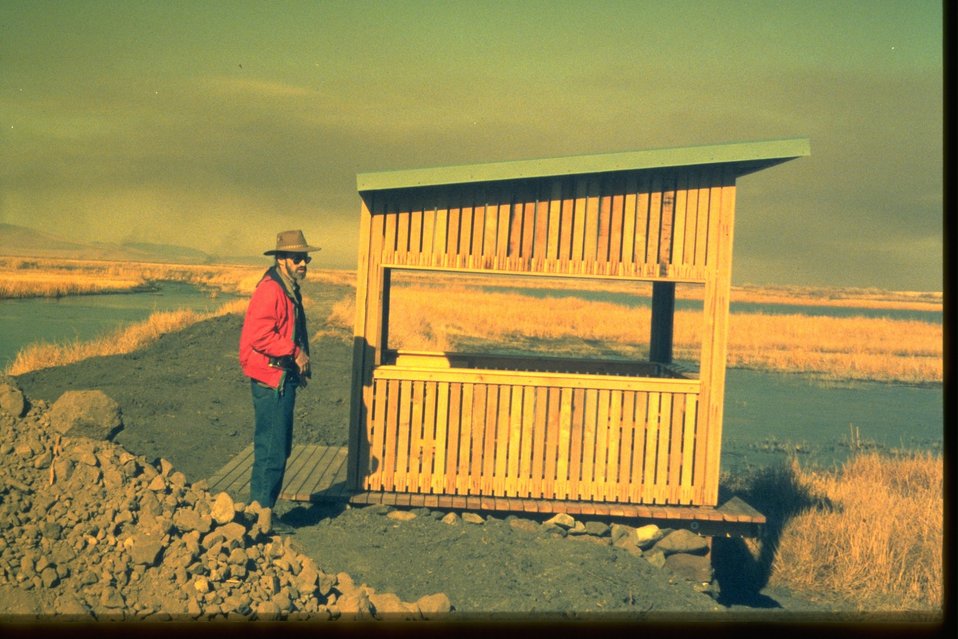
Viewing blinds & interpretive panels at the Warner Wetlands.